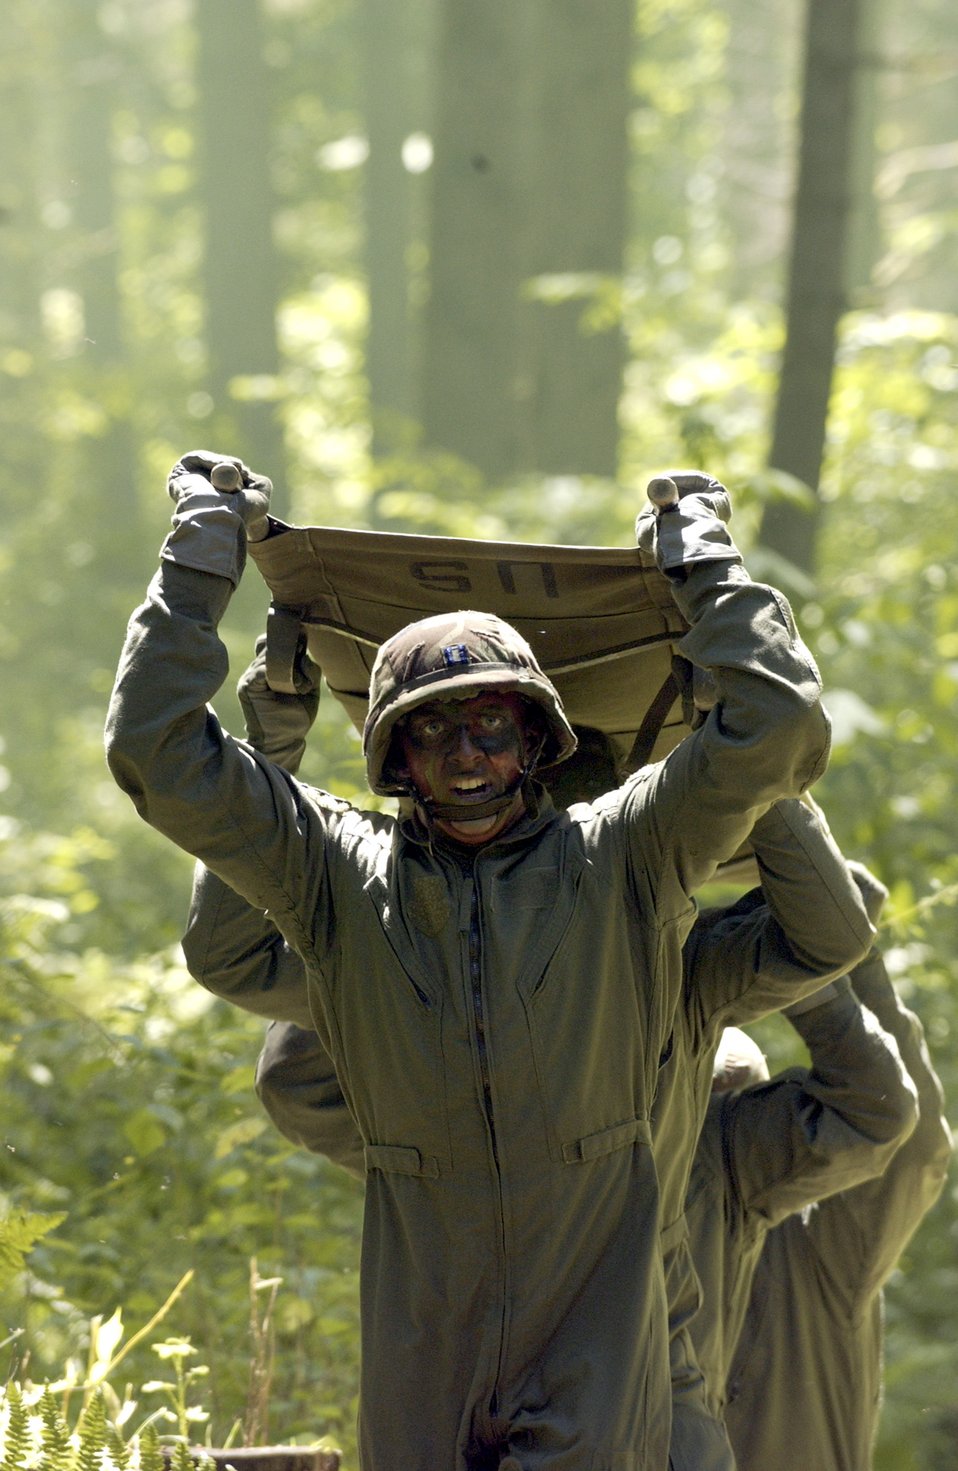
Carry on

FORT LEWIS, Wash. -- Airmen perform a high litter carry June 20 here during the Rodeo 2005 aeromedical obstacle course. They are assigned to the 86th Aeromedical Evacuation Squadron from Ramstein Air Base, Germany.